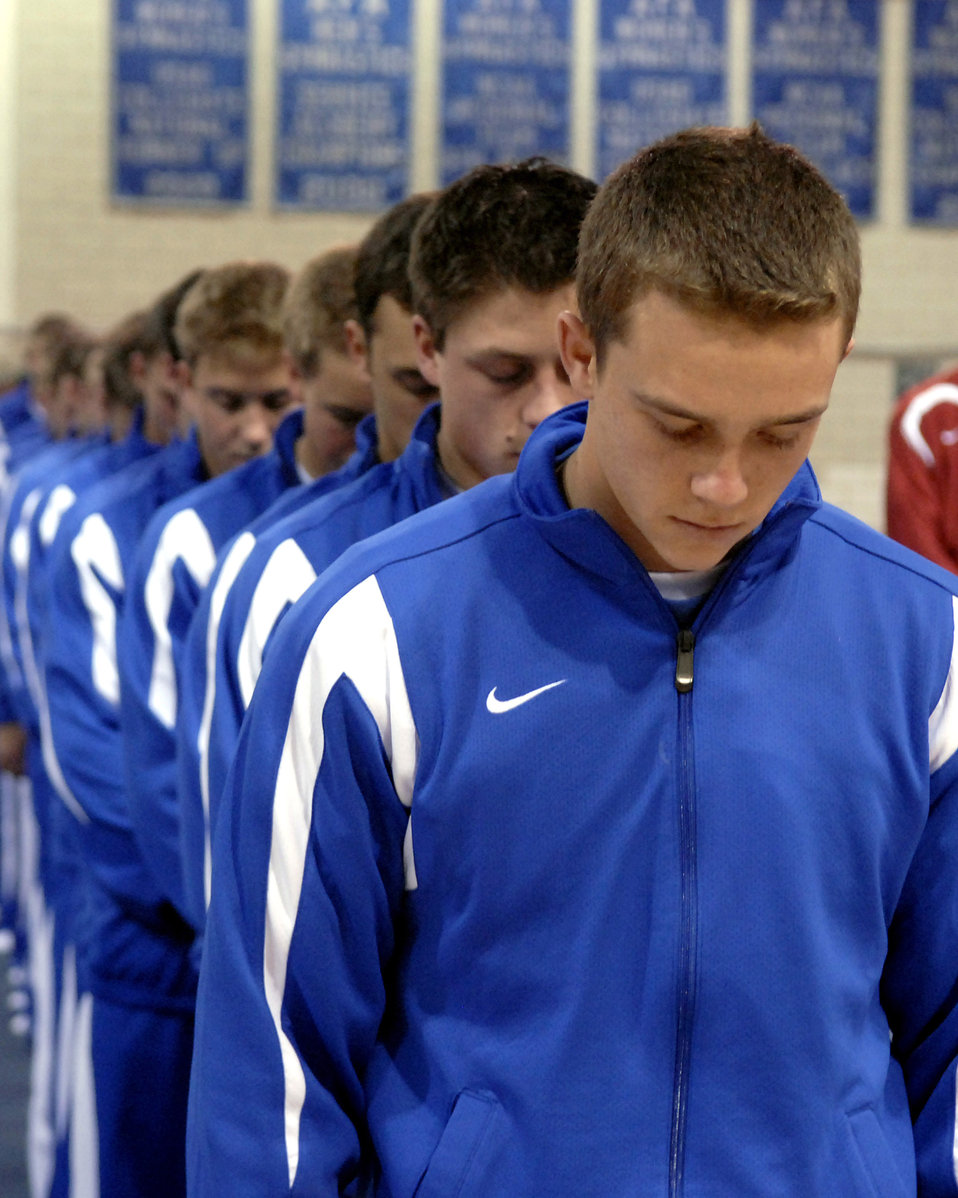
Airpower

U.S. Air Force Academy senior Jake Schonig leads the Academy men's gymnastics team in a moment of silence honoring Capt. Levi Torkelson, an assistant coach who died in a car accident Dec. 27, 2008, Jan. 10 at the Academy in Colorado. Schonig is the team captain.